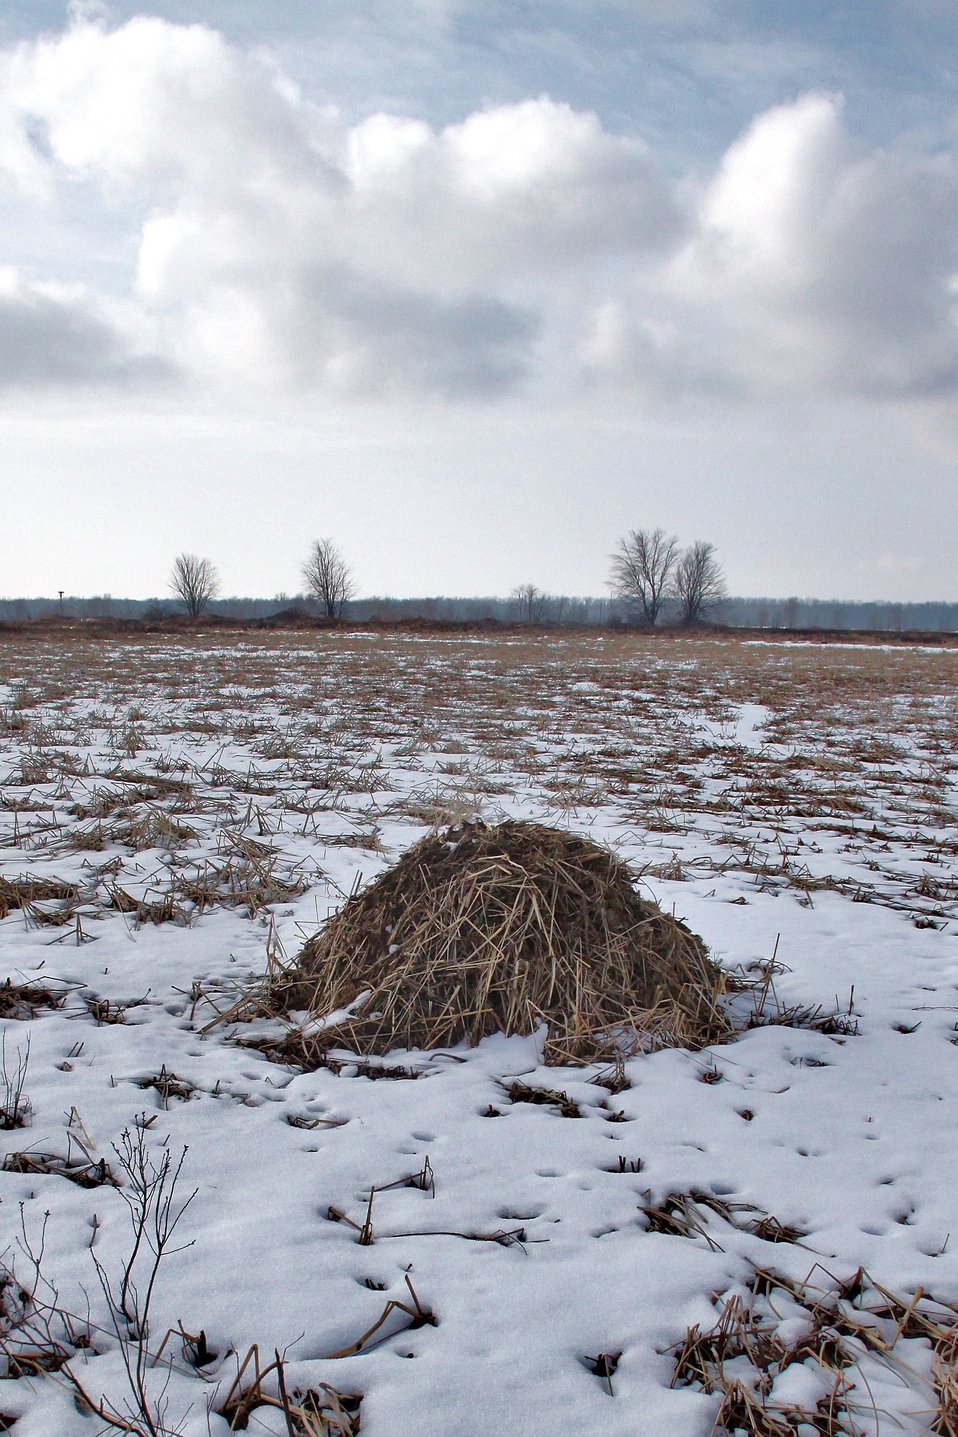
Muskrat lodge at Missisquoi National Wildife Refuge.